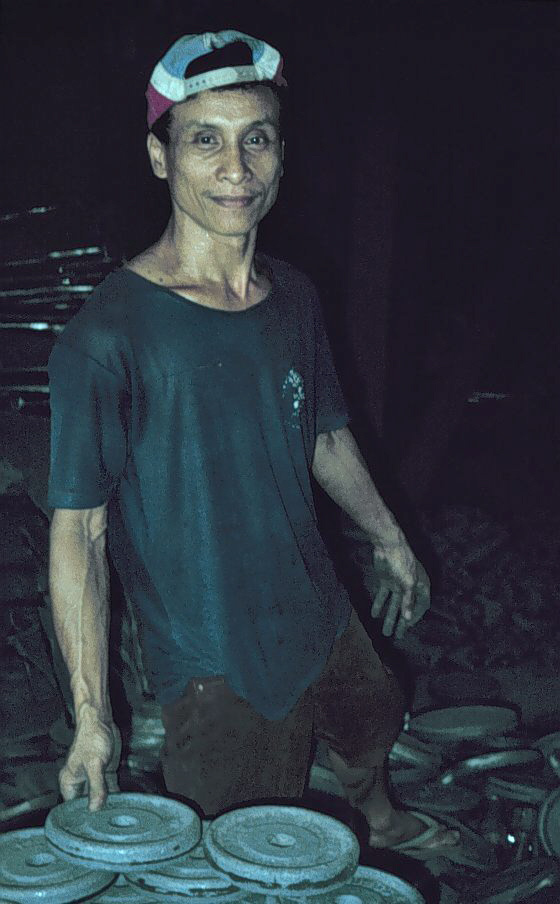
This photograph shows a foundry worker who took part in a 1998 hands-on industrial hygiene sampling course in Manila, Philippines.